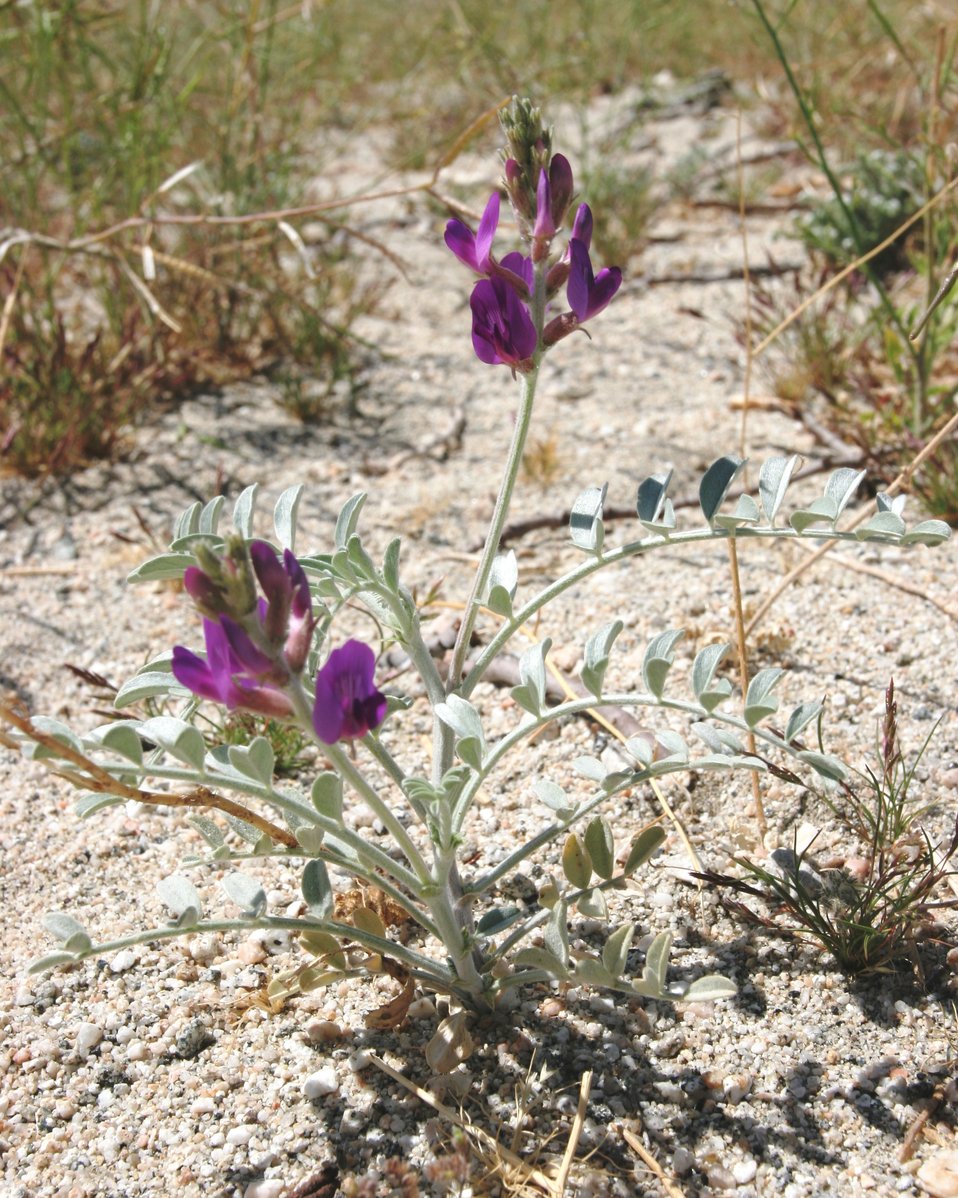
Coachella Valley milk-vetch flower

The Coachella Valley milk-vetch (Astragalus lentiginosus var. coachellae) is 4 to 12 inches tall and densely covered with short, white-silky hairs, giving it a silvery appearance. When in bloom, the flowers are deep purple to violet. The plant is an annual or short-lived perennial endemic in the Coachella Valley, Riverside County, California. It is primarily found on wind or water transported sands that are located on dunes or flats and along margins of sandy washes. This photo was taken along Morongo Wash in the City of Desert Hot Springs.